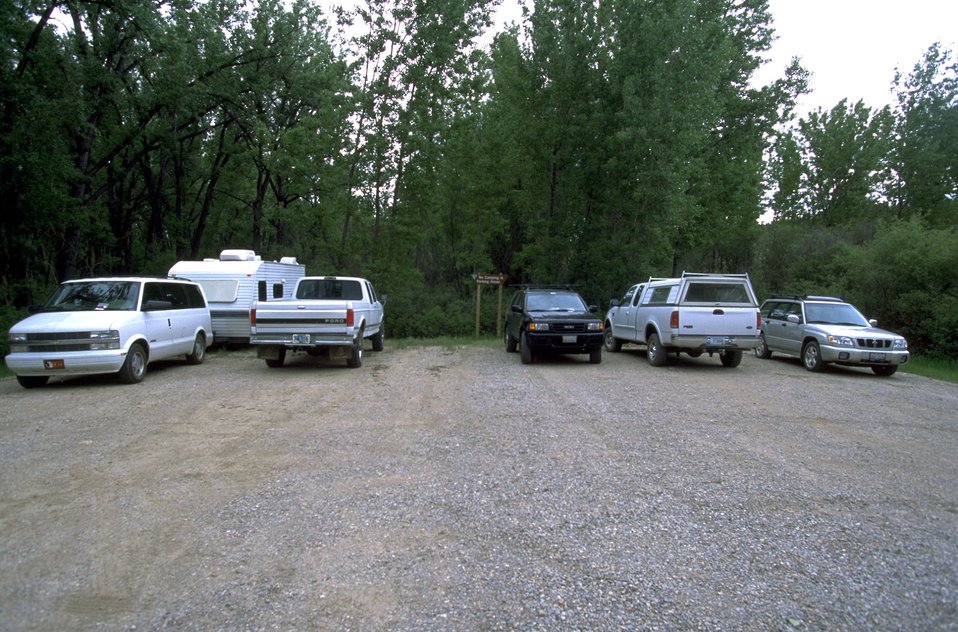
Parking Lot